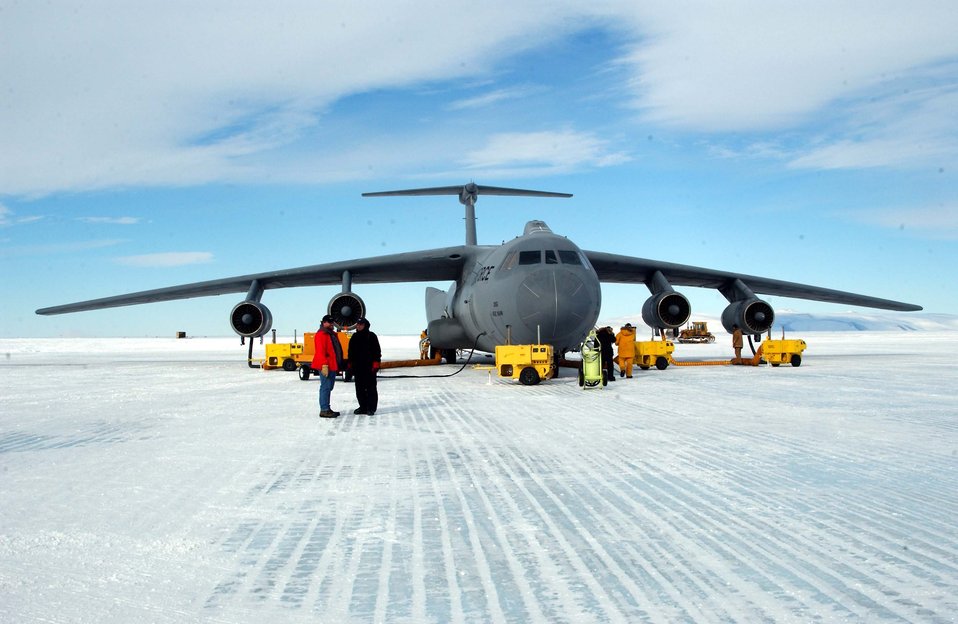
Operation Deep Freeze

MCMURDO STATION, Antarctica -- A C-141 Starlifter sits here with engine heaters to keep mechanical parts from freezing up under the frigid condition. Starlifters from the 445th Airlift Wing at Wright Patterson Air Force Base, Ohio, and the 452nd Air Mobility Wing at March Air Reserve Base, Calif., were here supporting Operation Deep Freeze.